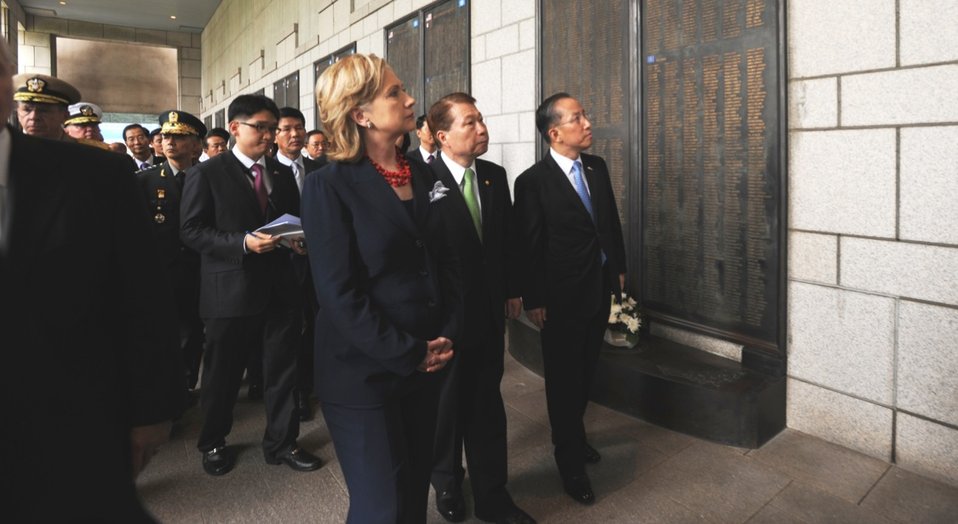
Secretary Clinton Views the Names of U.S. Soldiers Killed in the Korean War

U.S. Secretary of State Hillary Rodham Clinton views the names of U.S. soldiers killed in the Korean War along with Republic of Korea Foreign Minister Yu Myung-hwan and Republic of Korea Defense Minister Kim Tae-Young, and U.S. Defense Secretary Robert Gates (not pictured) at the Korean War Memorial in Seoul, South Korea, on July 21, 2010.